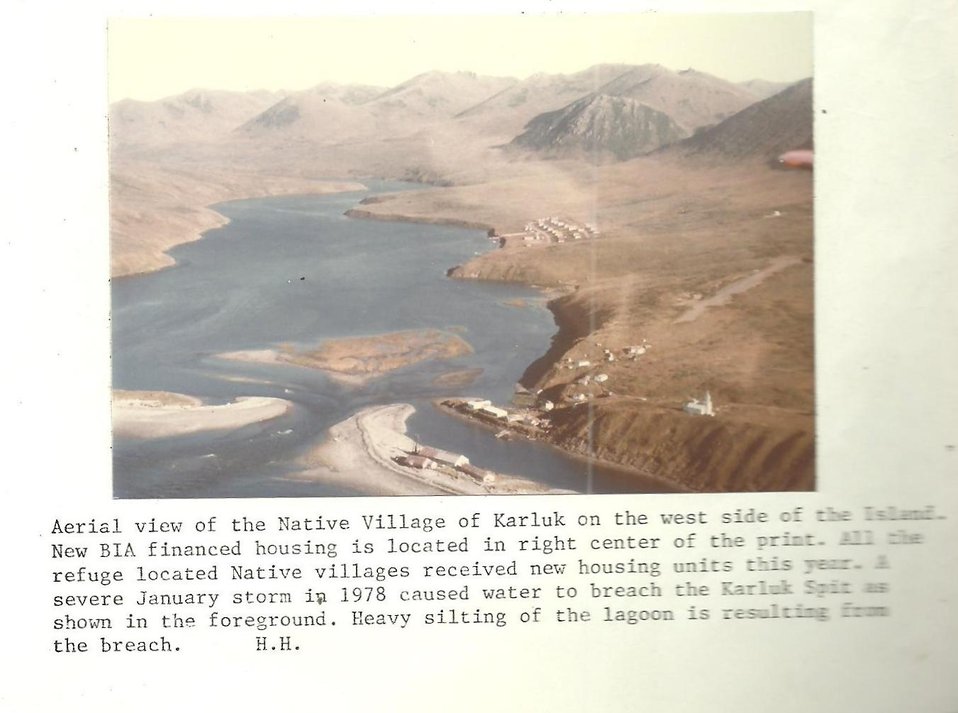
(1979) Karluk Village

Credit: USFWS

Source and Contact: Kodiak National Wildlife Refuge